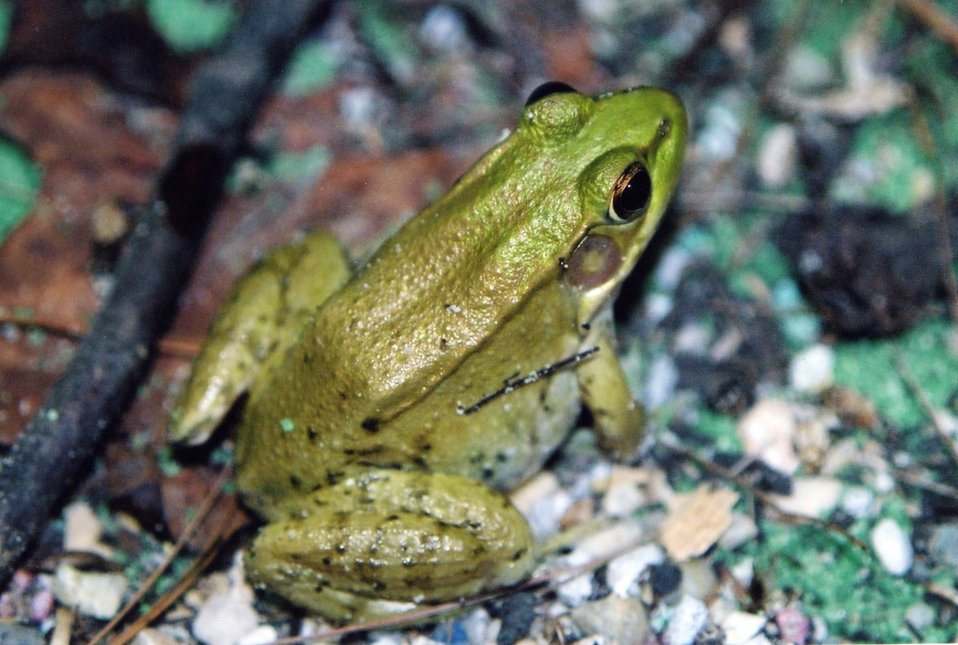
Frog.